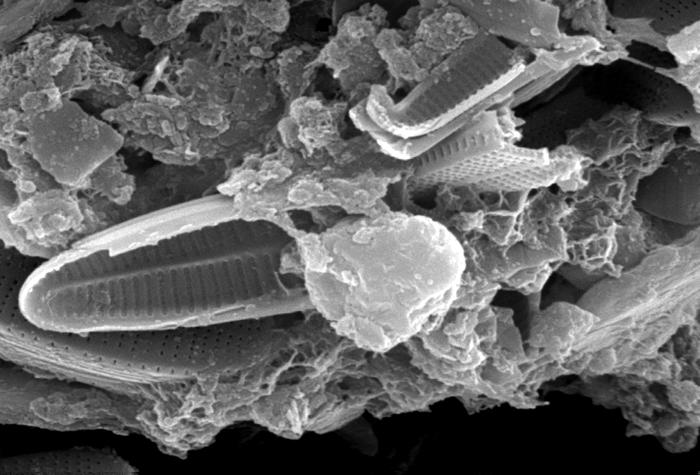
This scanning electron micrograph (SEM) of an untreated water specimen extracted from a wild stream mainly used to control flooding during inclement weather, revealed the presence of unidentified organisms, which included bacteria, protozoa, and algae. In this particular image, unidentified species of diatoms are seen to be caught up in an amorphous gelatinous biofilm, which had entrapped stream particulates as well. In the center, you'll note what may have been an amoeboid organism.